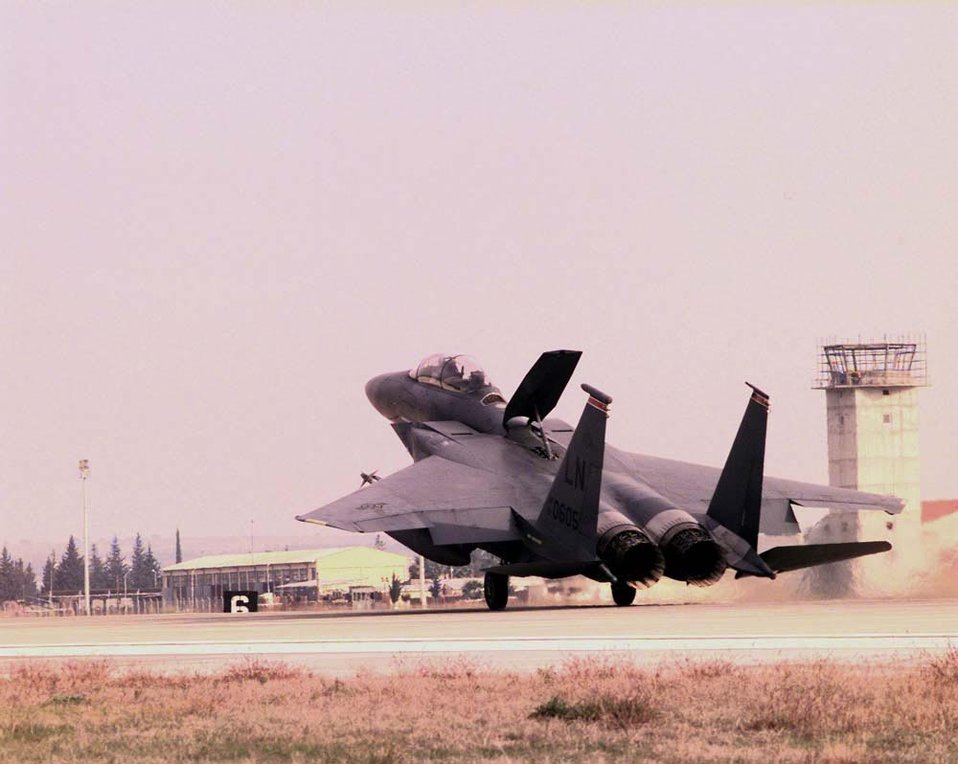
Mission complete

OPERATION NORTHERN WATCH -- An F-15E Strike Eagle from the 494th Expeditionary Fighter Squadron applies its speed brake upon touchdown after returning safely to Incirlik Air Base, Turkey, Jan. 14, following a routine enforcement mission in support of Operation Northern Watch. The Strike Eagle was part of a defensive strike on an Iraqi surface-to air-missile system in northern Iraq.